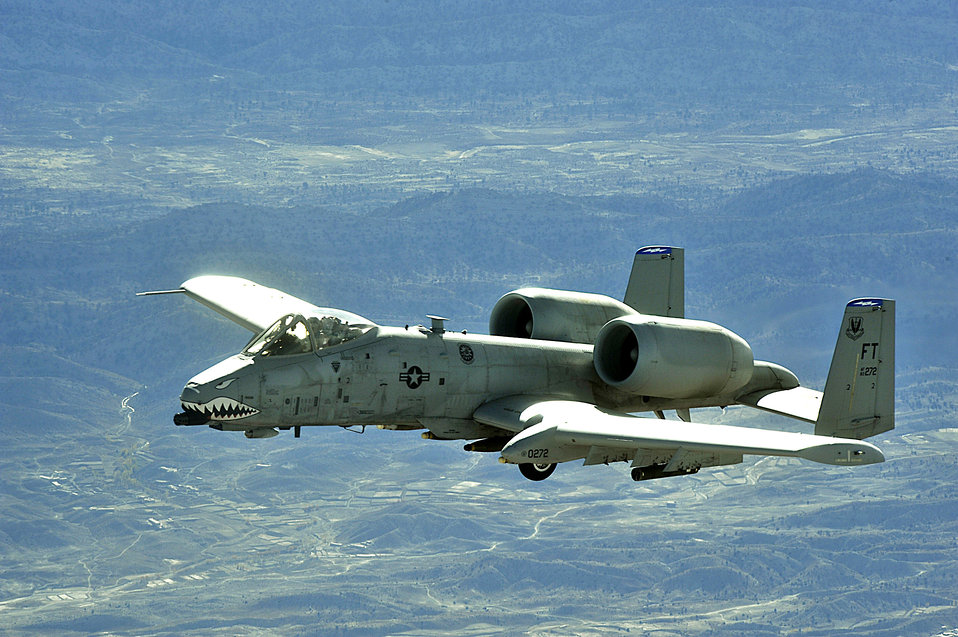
Nov. 17 airpower summary: A-10s deter enemy activities

An A-10 Thunderbolt II flies a combat mission over Afghanistan. A-10s provide close-air support and employ a wide variety of conventional munitions, including general purpose bombs, cluster bombs units and laser guided bombs.